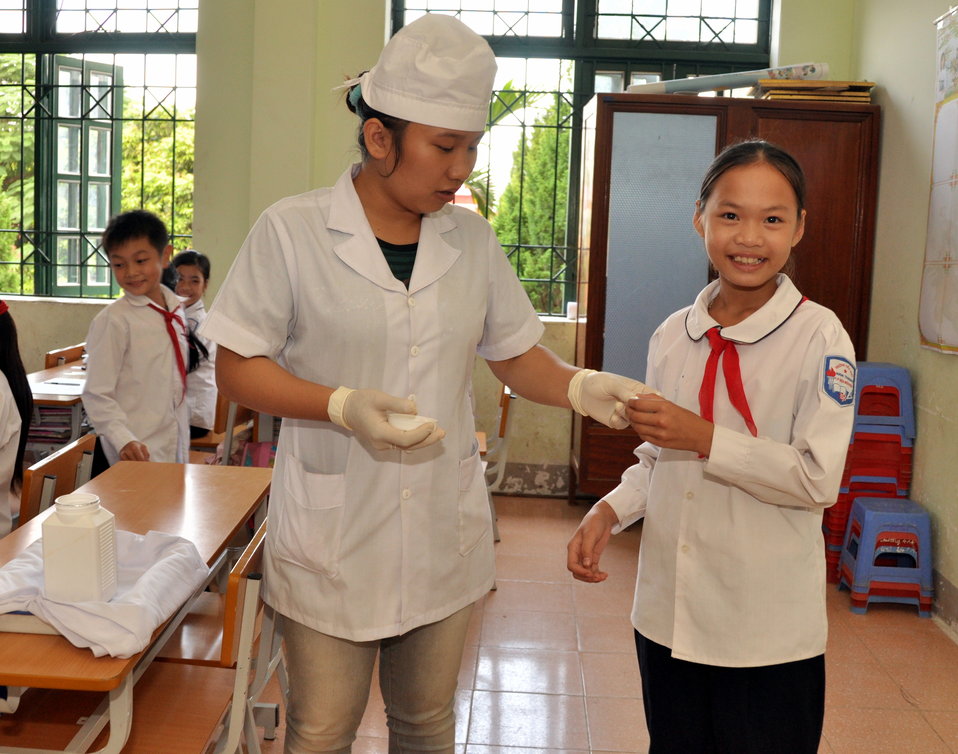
School children receive a dose of deworming medicine in Dien Bien